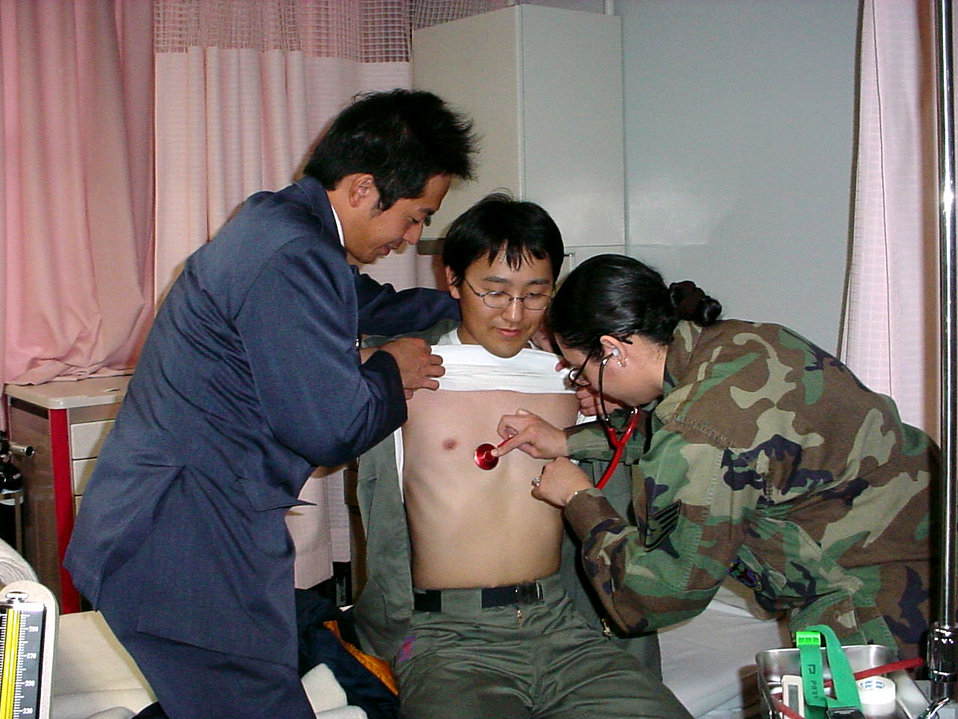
NCOs participate in exchange program

YOKOTA AIR BASE, Japan -- Staff Sgt. Tricia Ochinang examines a patient at Komaki Air Base's hospital. Ochinang was one of seven Yokota AB noncommissioned officers selected to participate in a 10-day exchange between Yokota and Komaki air bases. Ochinang is a technician assigned to the 374th Medical Group.